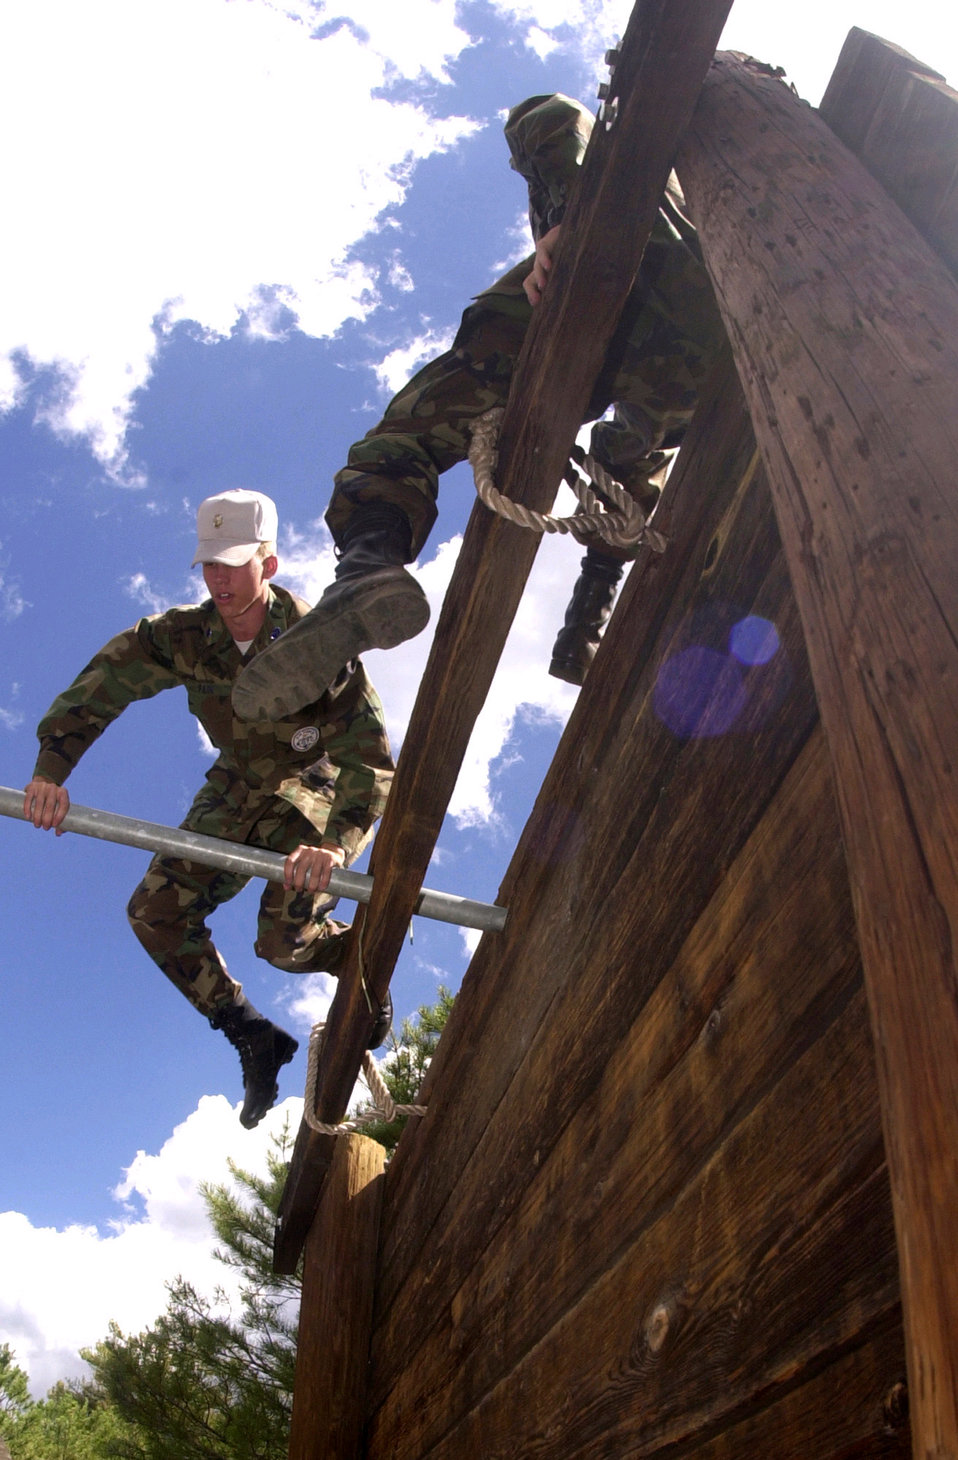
Up and over

CAMP NAVAJO, Ariz. -- Air Force junior ROTC cadets jump off of an obstacle at the confidence course competition during Air Force JROTC Summer Leadership School here Aug. 3. Airmen from the 56th Fighter Wing at Luke Air Force Base, Ariz., assisted in training 140 high school cadets from Dobson, Desert Ridge, Mesa, Peoria and Westwood high schools.